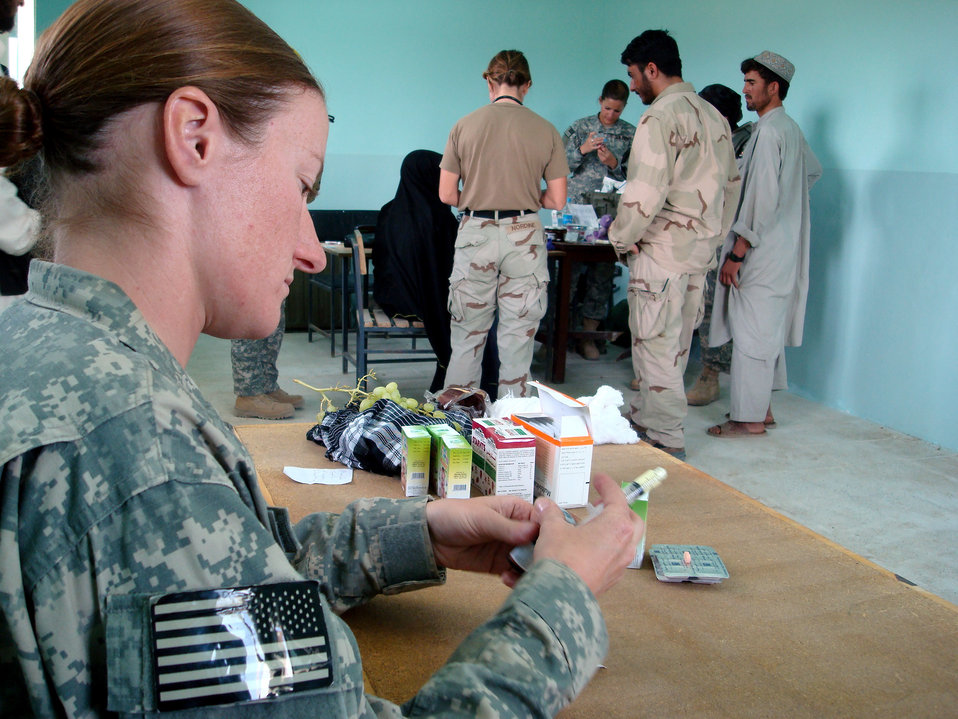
Small meds make big impact in Afghan village

Staff Sgt. Jill Renshaw prepares de-worming medication for Afghan patients during a Village Medical Outreach Aug. 22 in the Shinkay District, Afghanistan. Nearly 200 people were seen by Provincial Reconstruction Team Qalat medics.